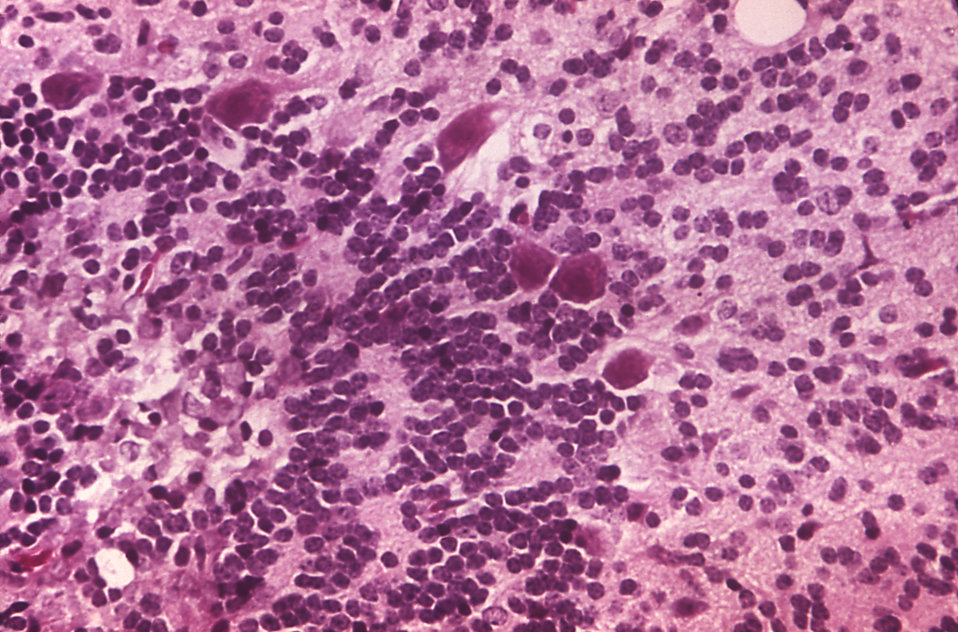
This photomicrograph depicts the cellular pathology associated with Tamiami virus encephalitis; Mag. 300X.